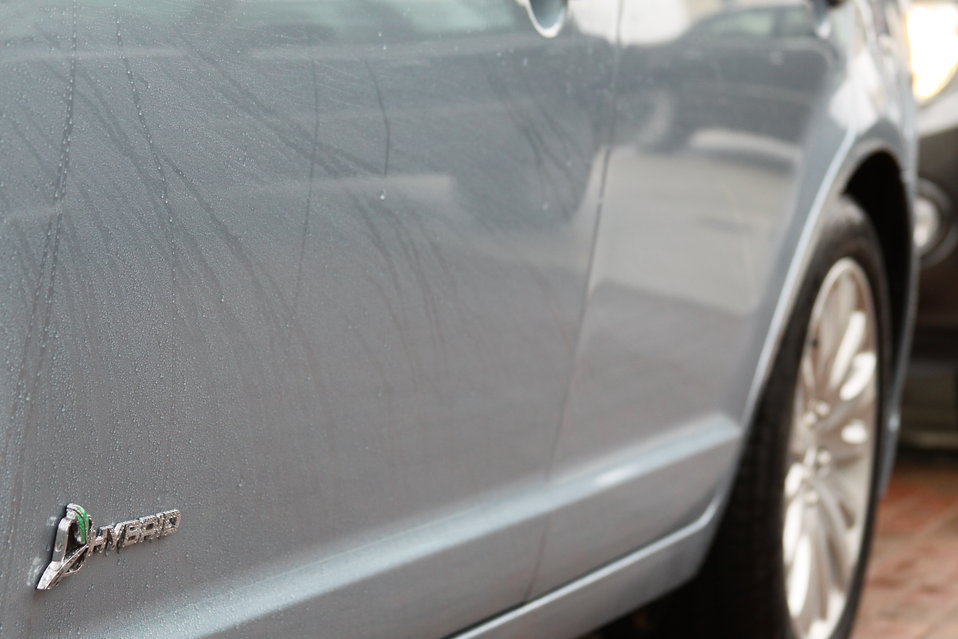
FCC Official Vehicle Tour